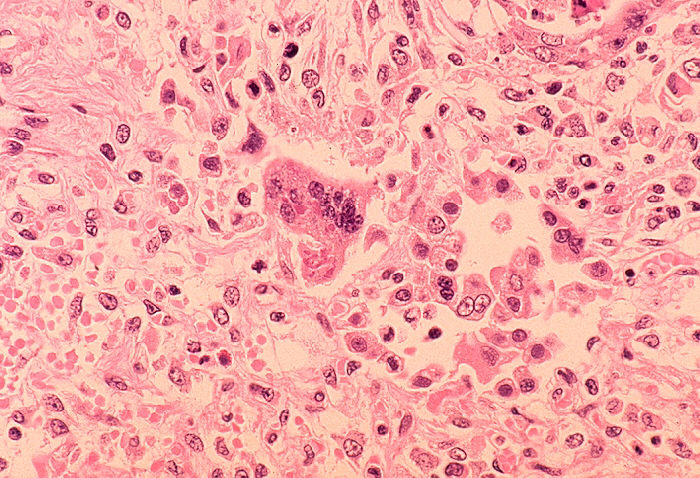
Histopathology of measles pneumonia.